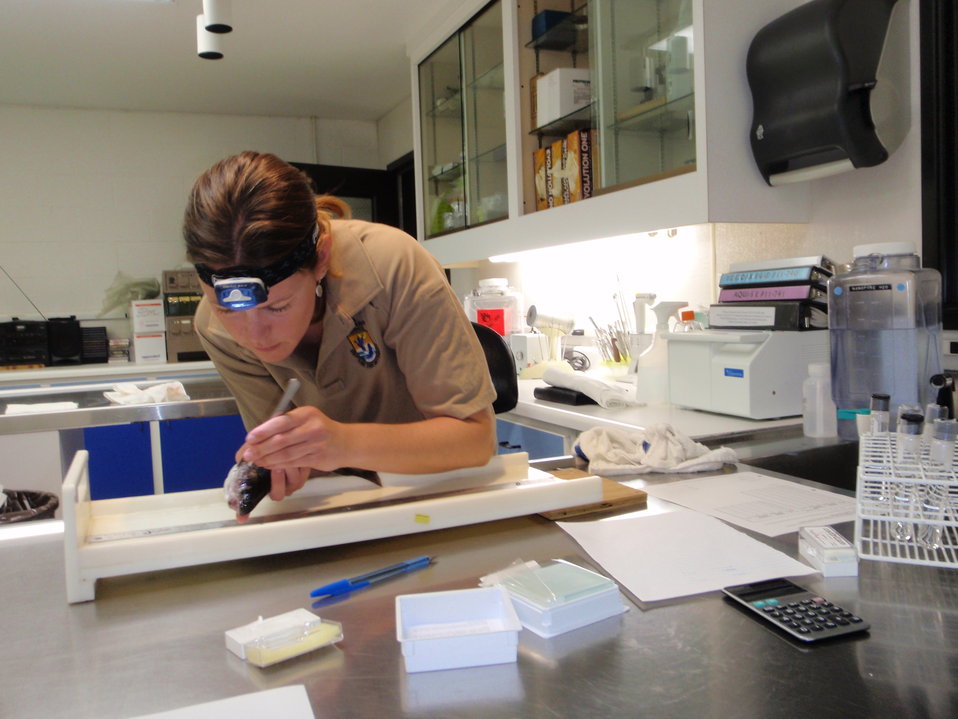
Niccole Wandelear picking Salmincola californiensis (external parasite) from rainbow trout gills during a SLICE field efficacy study

Rachel Carson Award for Scientific Excellence (Group) – 2013